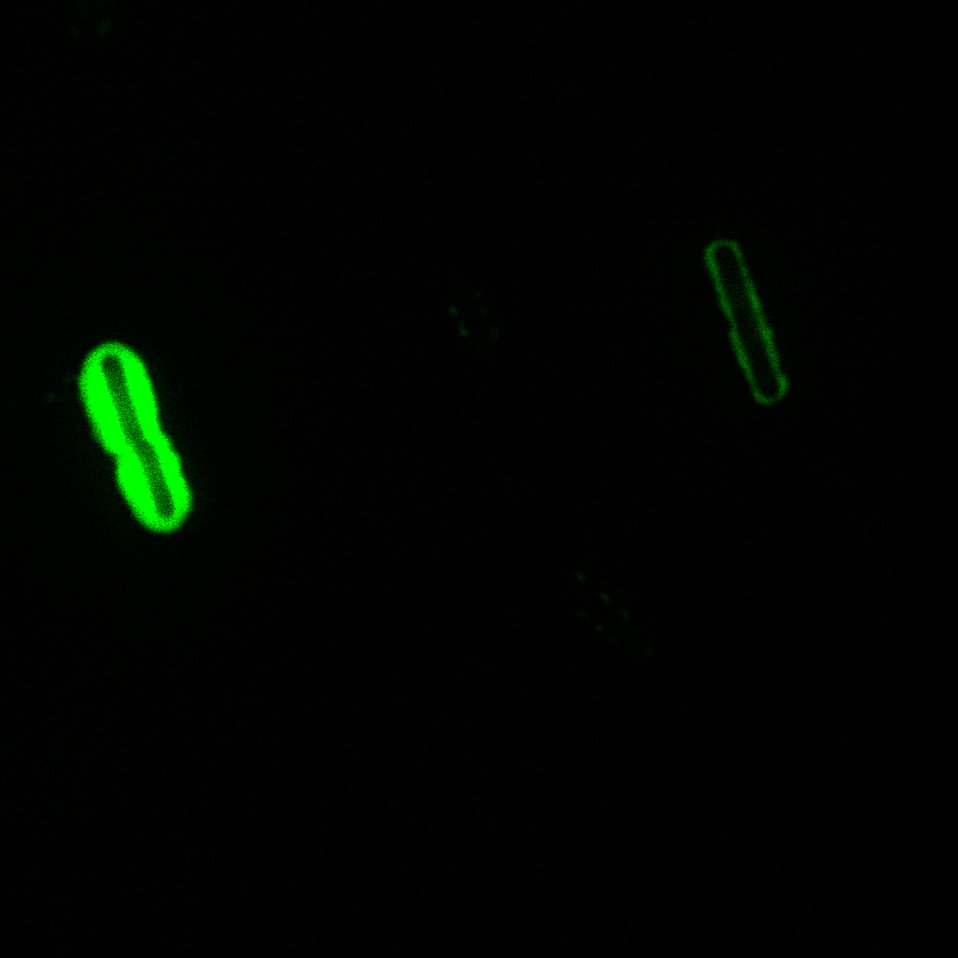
B. anthracis Direct Fluorescent Antibody (DFA) capsule stain.